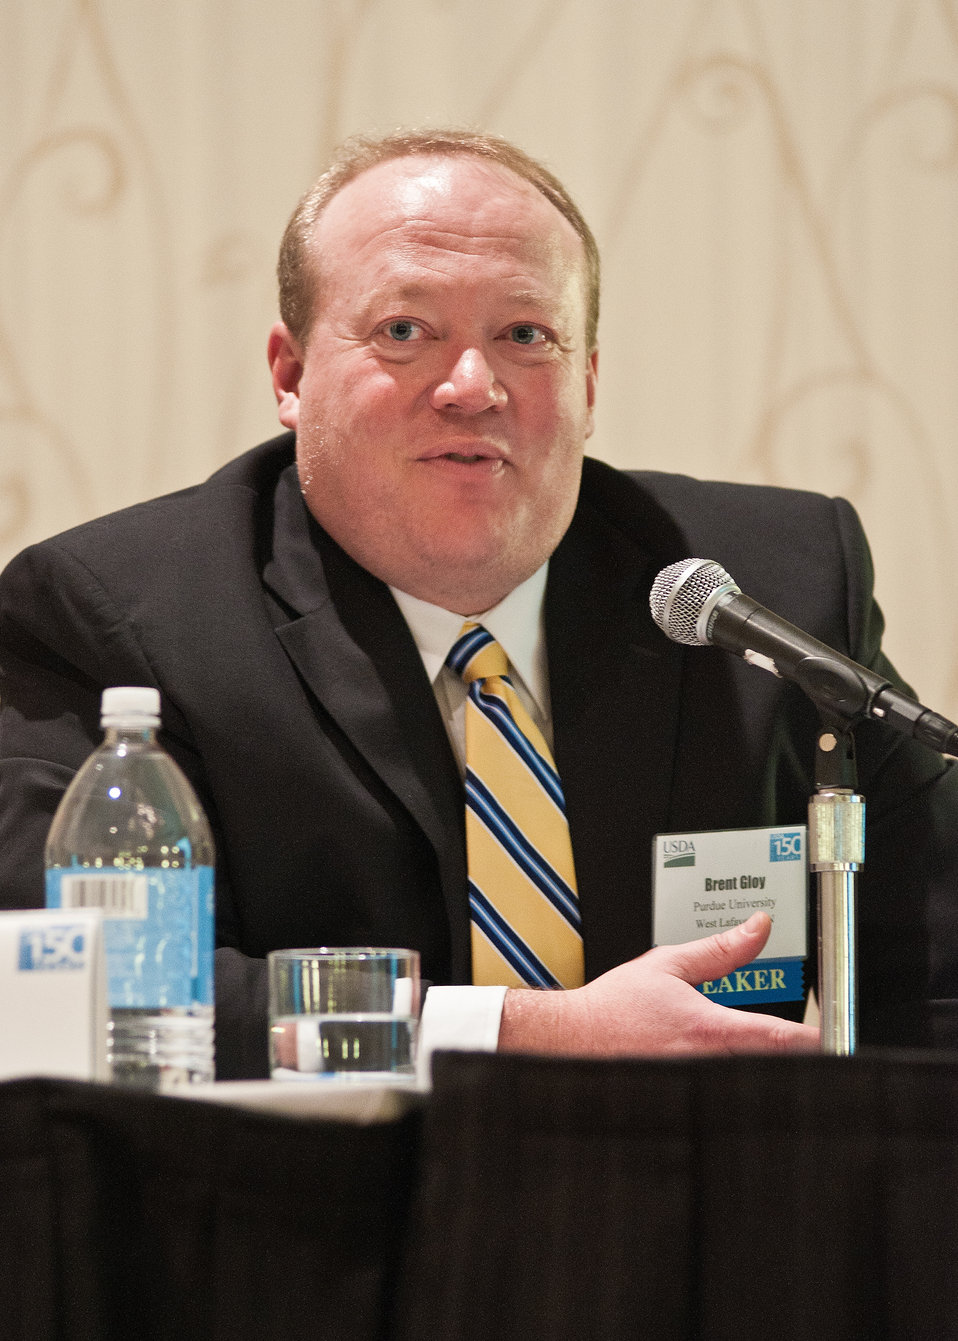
Brent Gloy, Associate Professor and Director of the Center for Commercial Agriculture, Department of Agricultural Economics, Purdue University, West Lafayette, Indiana spoke at the Agricultural Financial Markets and Investment afternoon breakout session at the 2012 Agricultural Outlook Forum, “Moving Agriculture Forward, Growing, Innovating and Celebrating 150 Years” held at the Crystal gateway Marriott Hotel Arlington, Virginia, Friday, February 24, 2012. The session focused on patterns of financial investment in United States agricultural assets, changes in types of lenders serving the agriculture sector and the economics of land prices.